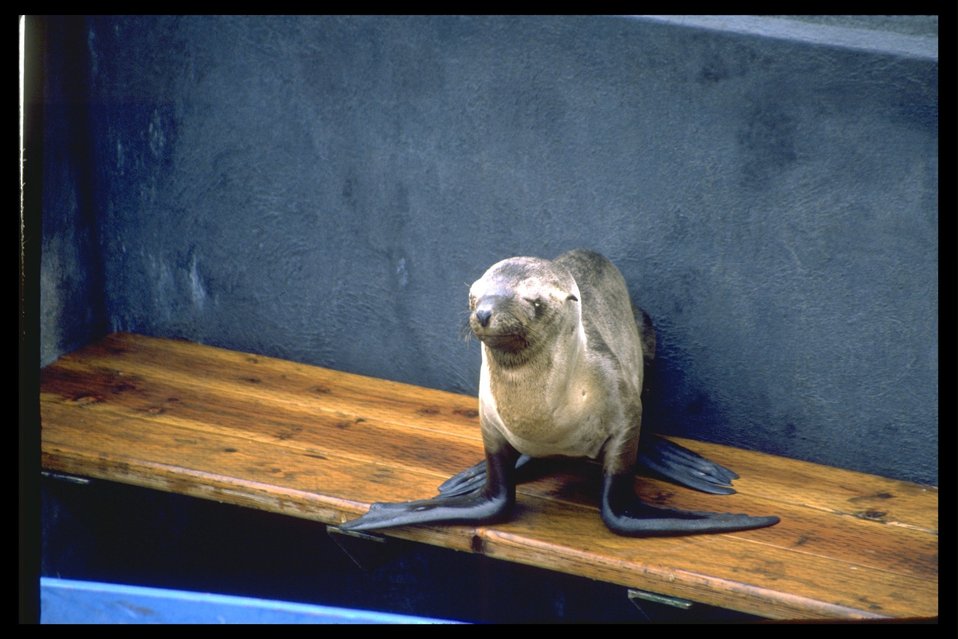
California Sea lion of Cobble Beach stairs, near Yaquina Head Lighthouse.